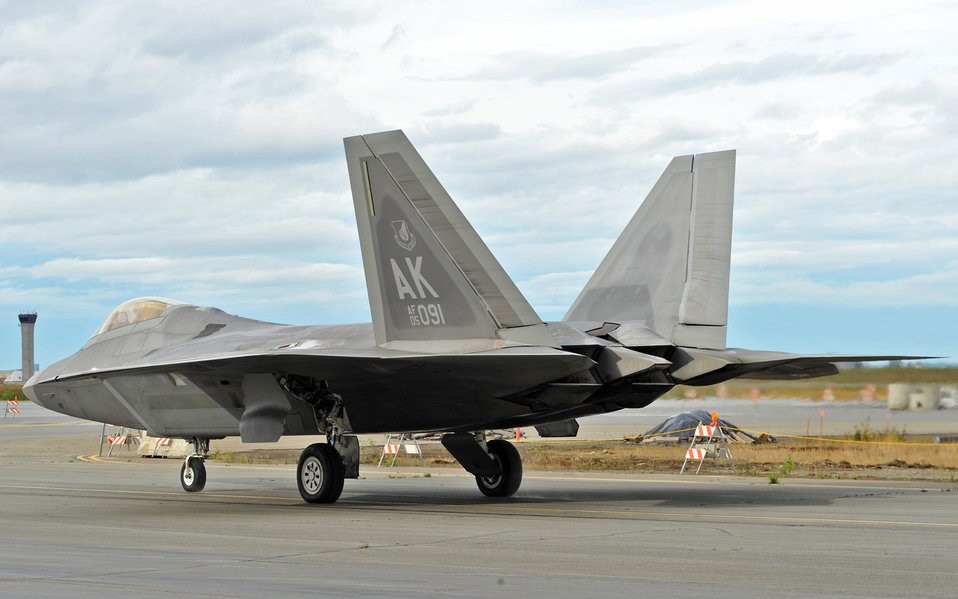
Raptors at Red Flag-Alaska

An F-22 Raptor taxis the runway participating in a Red Flag-Alaska mission July 27 at Elmendorf Air Force Base, Alaska. Red Flag is a Pacific Air Forces commander-based field training exercise for U.S. coalition forces flown under simulated air combat conditions. It provides joint offensive counter-air, interdiction close air support, and large force employment training in a simulated combat environment. Participating bases include Elmendorf and Eielson Air Force bases, Alaska, and Osan Air Base, South Korea.